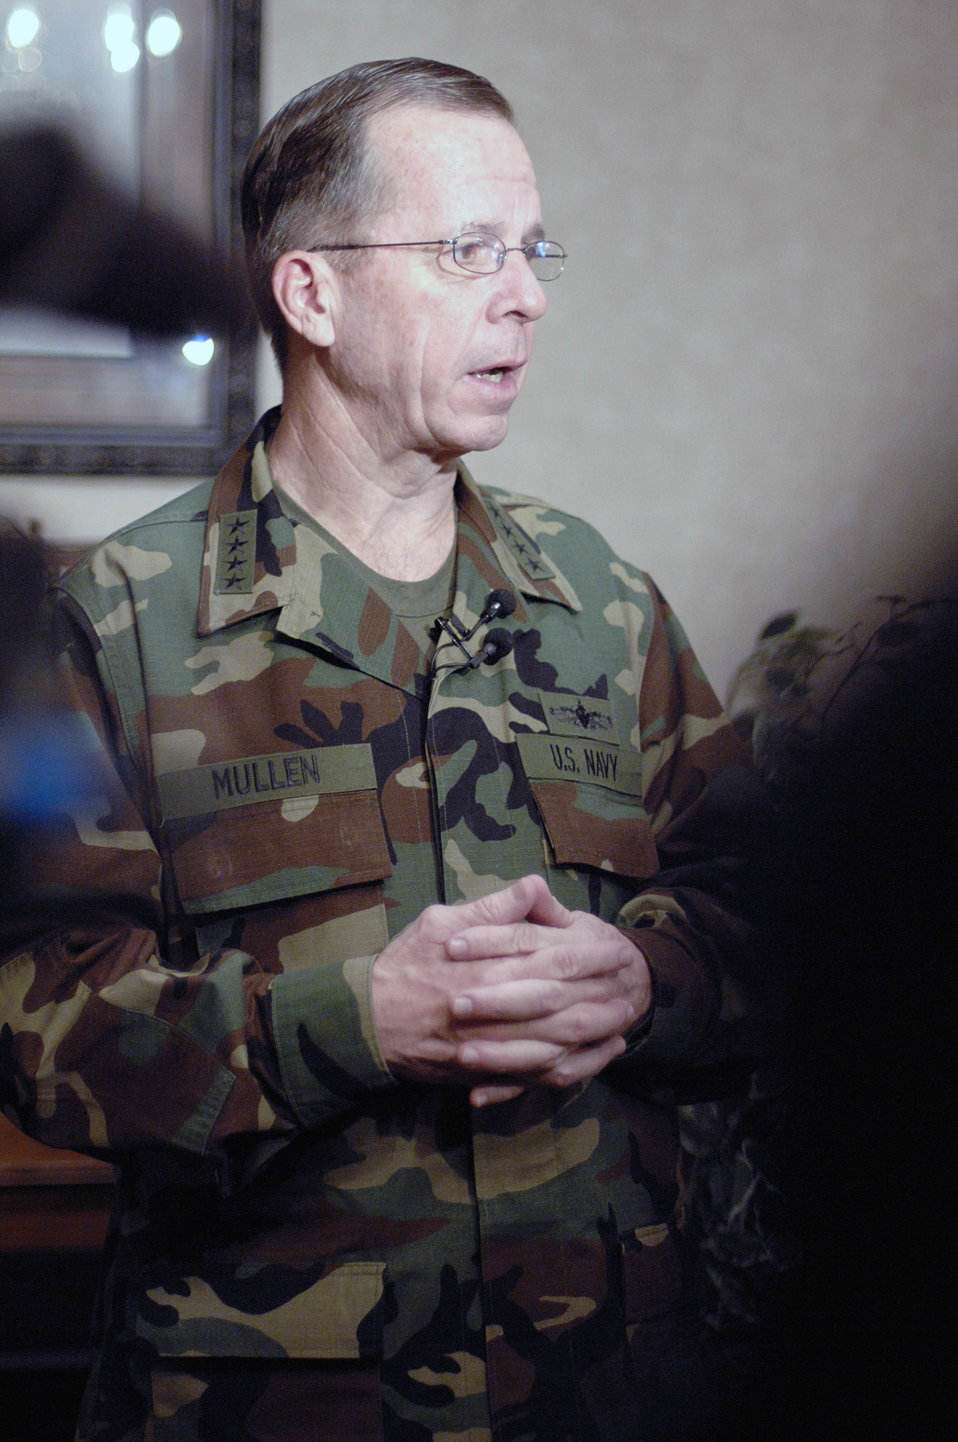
JCS chairman visits Minot

Adm. Michael G. Mullen, chairman of the Joint Chiefs of Staff, addresses local and national media during a visit Feb. 18 to Minot Air Force Base, N.D. During his visit, Admiral Mullen held a town hall meeting and talked with Airmen about the importance of family support, concerns over the economic crisis and the base's role in nuclear deterrence as the Air Force's only dual-wing, nuclear-capable base.